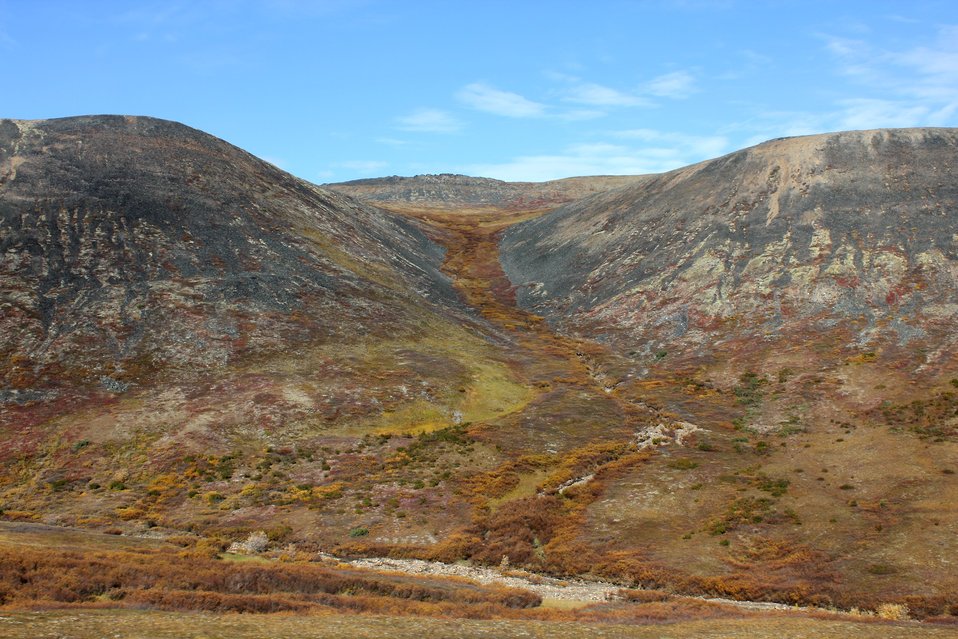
Tundra scene along the Dempster Highway